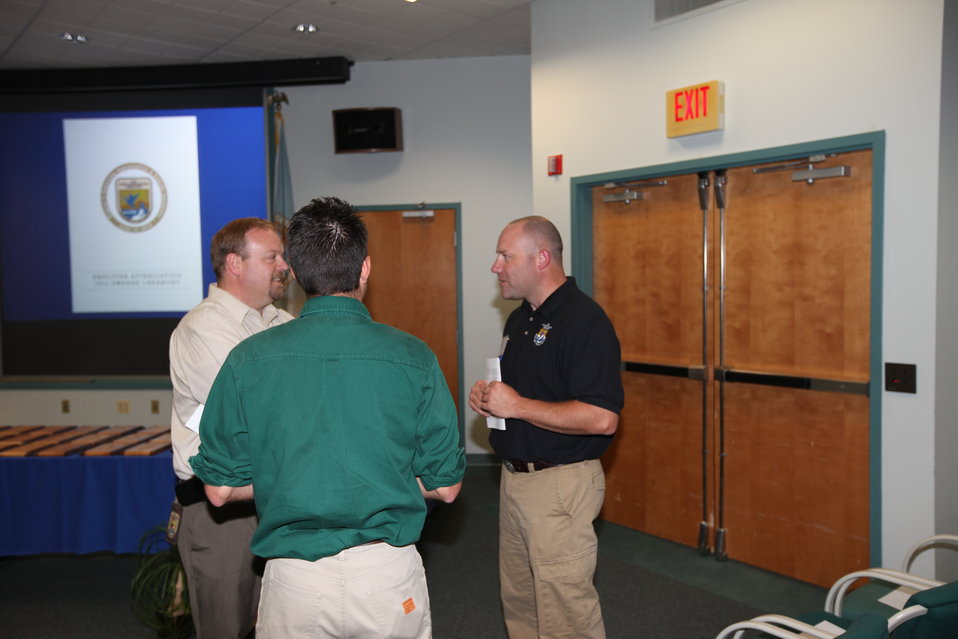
Northeast Region Employee Appreciation Awards